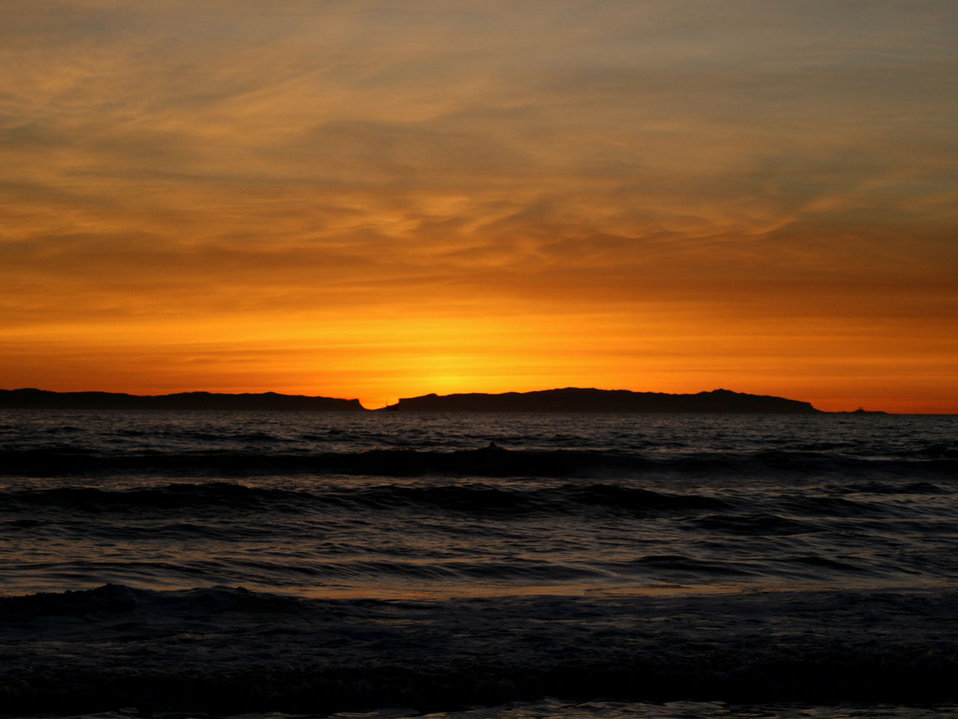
Sunset over catalina island shot from the beach at huntington beach, ca, 23 dec 2007.